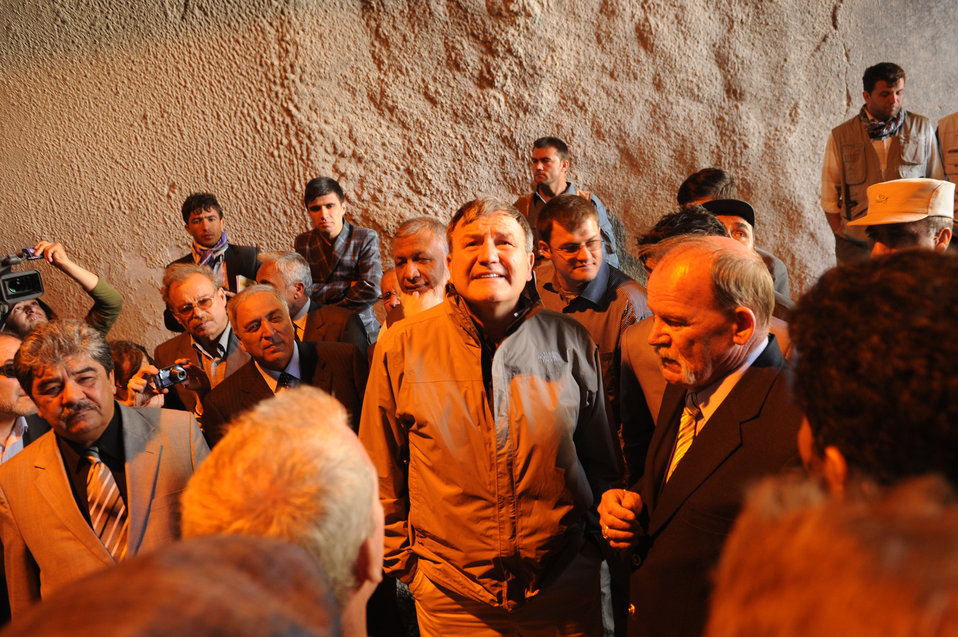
U.S. Ambassador Karl W. Eikenberry attends a ceremony to mark the beginning of renovations at the Salang Tunnel on the border of Parwan and Baghlan Provinces, Afghanistan, on Wednesday, June 15, 2011. (S.K.Vemmer/Department of State)